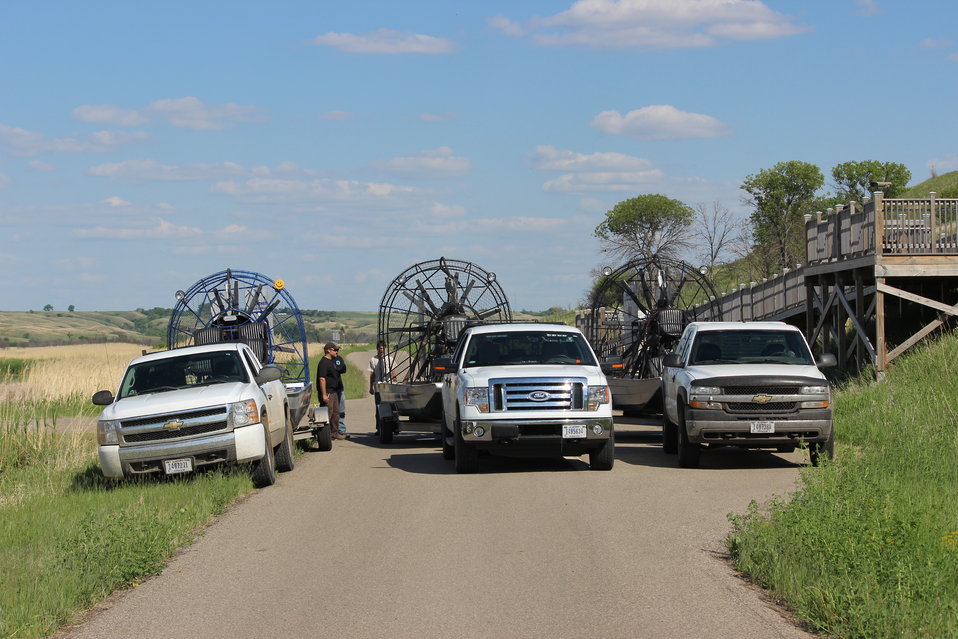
Loaded and Ready-to-Go

A Motorboat and Airboat Safety Training was recently held at the Upper Souris National Wildlife Refuge in North Dakota. Students received classroom training as well as field training in the use of personal flotation devices (PFDs), various motorized boats, trailers, and airboats. Students had to pass both a written exam and a practical exam where both safety and skills were demonstrated while running set up courses.